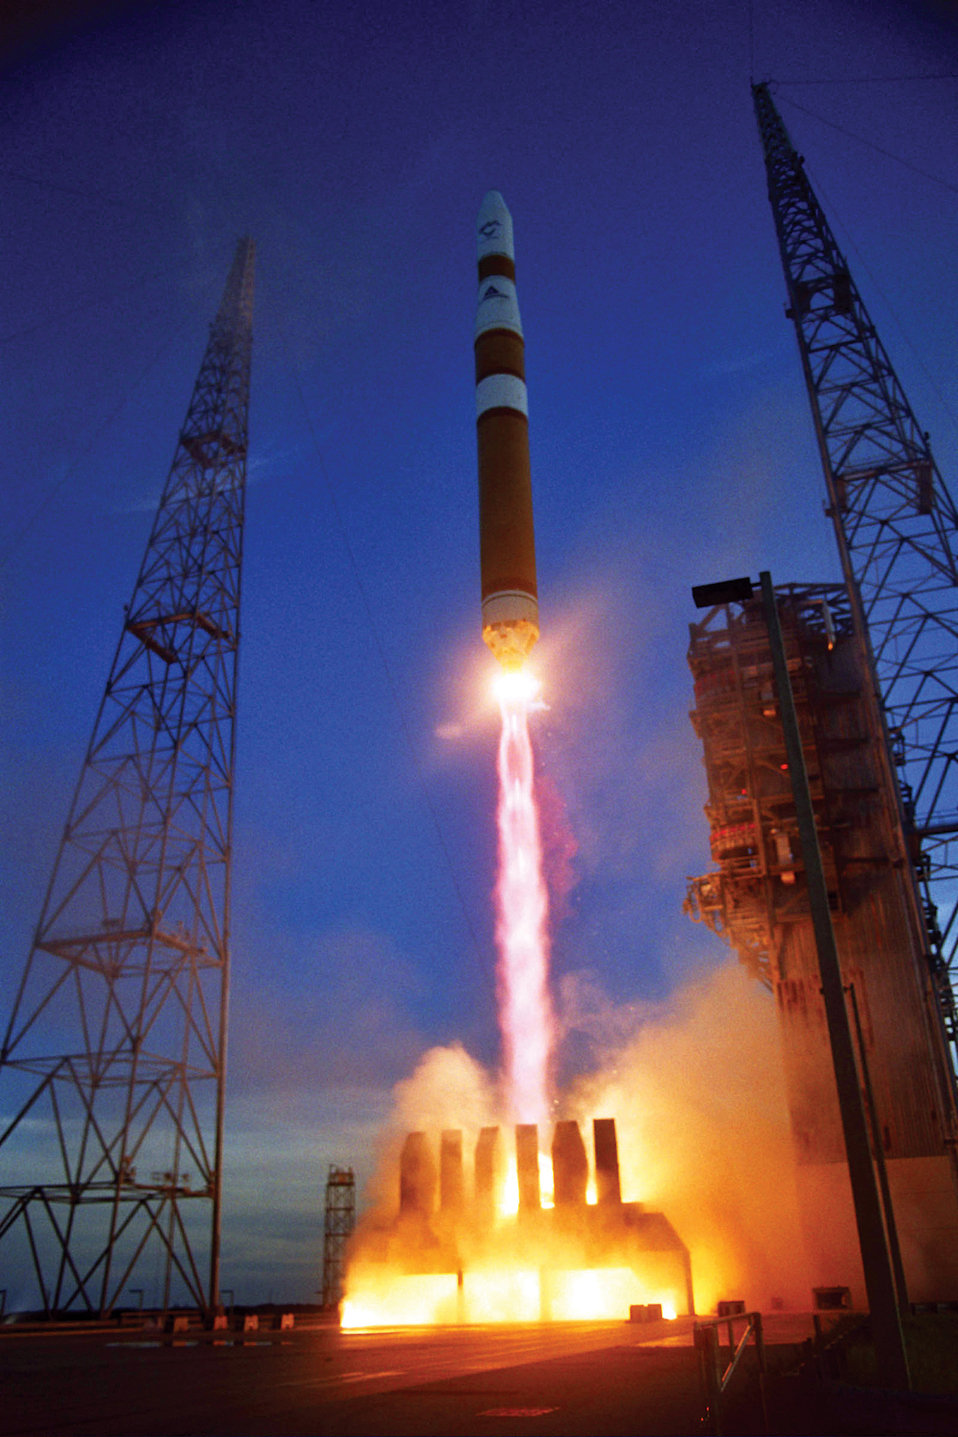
Delta launch

CAPE CANAVERAL AIR FORCE STATION, Fla. -- A Delta IV rocket lifts off from here Aug. 29. A Defense Satellite Communication System was placed into orbit by the rocket. It was the last of the system to be launched.